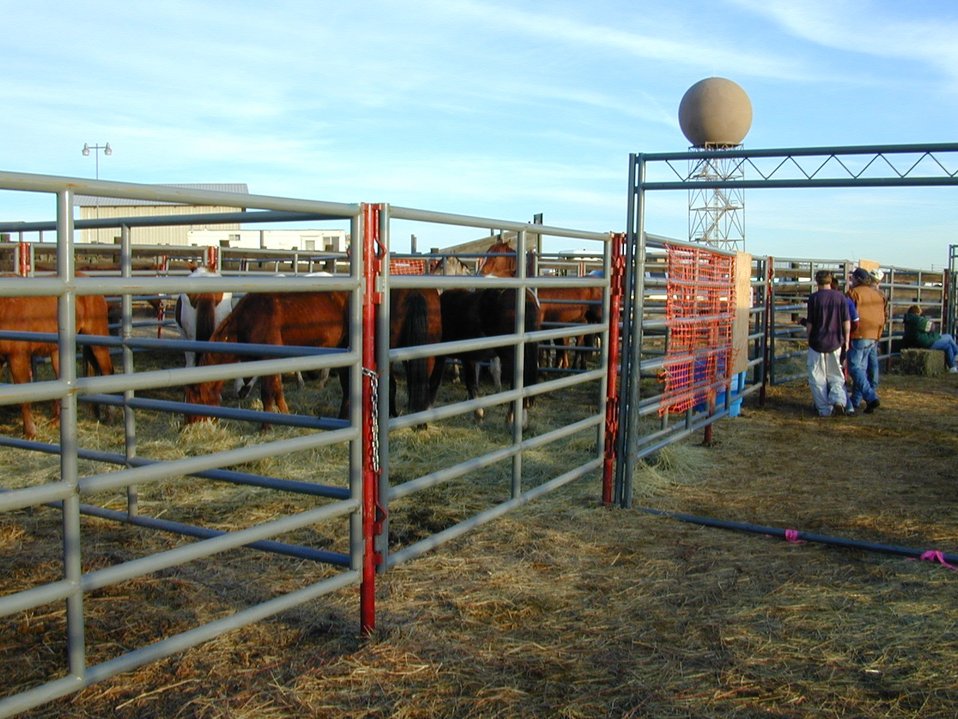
Wild Horse and Burro Adoption